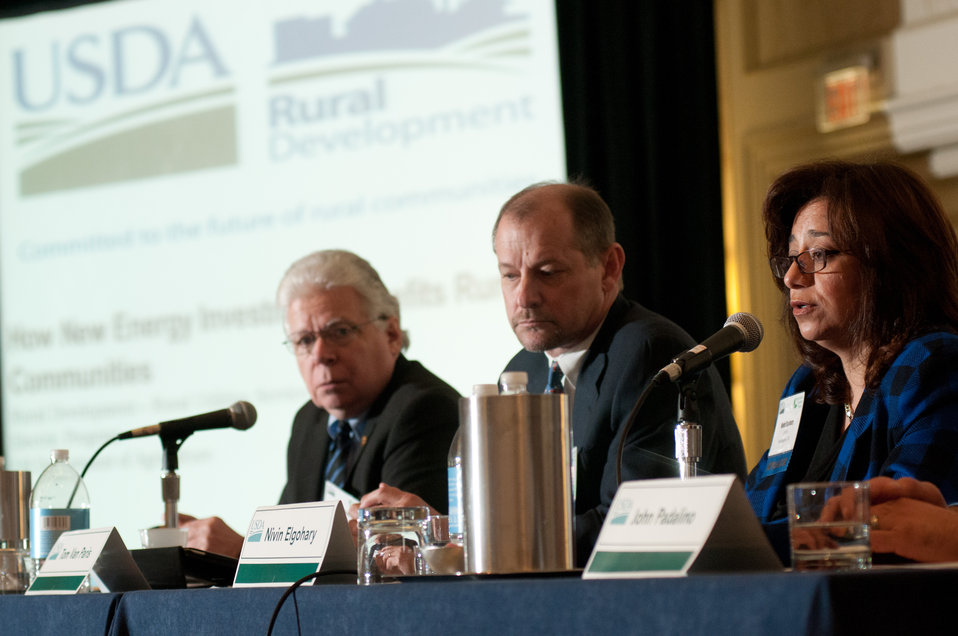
The U.S. Department of Agriculture (USDA) Rural Development (RD), Electric Program Rural Utilities Service Assistant Administrator Nivin Elgohary, right, speaks on the topic; How New Energy Investment Benefits Rural Communities, during the Energizing Rural Economies breakout session at the 2013 Agricultural Outlook Forum held at the Crystal Gateway Marriott Hotel in Arlington, VA on Friday, Feb. 22, 2013. The panel discussed the expanding capital available for rural investments that helps deliver the tools and technologies to meet energy, telecommunications, and business needs to help the rural economy to grow. Rural Development programs and services can help rural consumers increase productivity, efficiency, and innovation, which can expand domestic an foreign markets, reduce costs, and help diversify and strengthen rural economies.